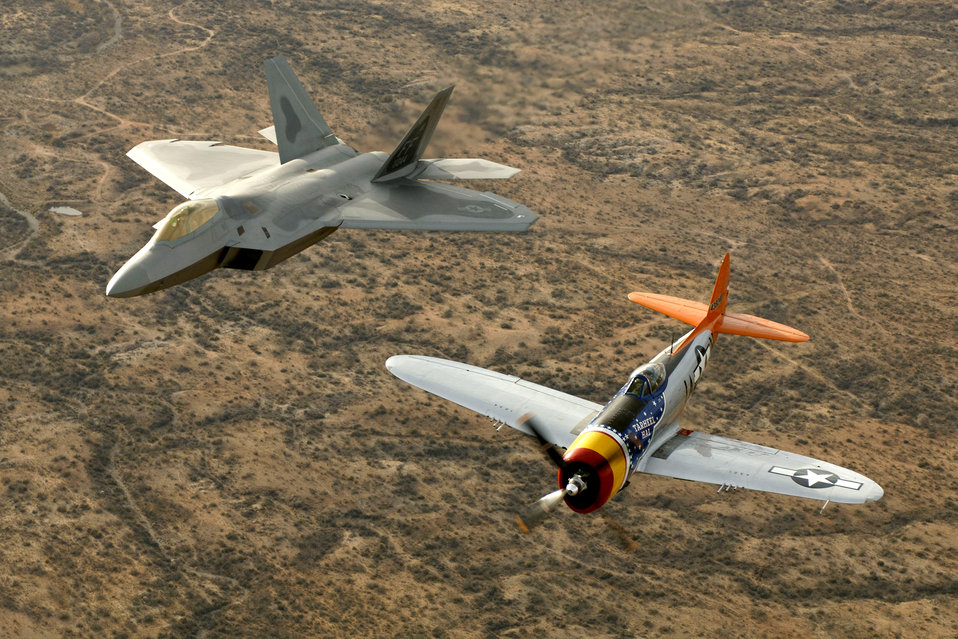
Heritage flight

A World War II-era P-47 Thunderbolt and an F-22A Raptor from Langley Air Force Base, Va., fly in formation over Tucson, Ariz., Sunday, March 5, 2006, during the Air Combat Command Heritage Conference at Davis-Monthan Air Force Base. Tom Gregory flew the Thunderbolt and Lt. Col. Michael Shower flew the Raptor.